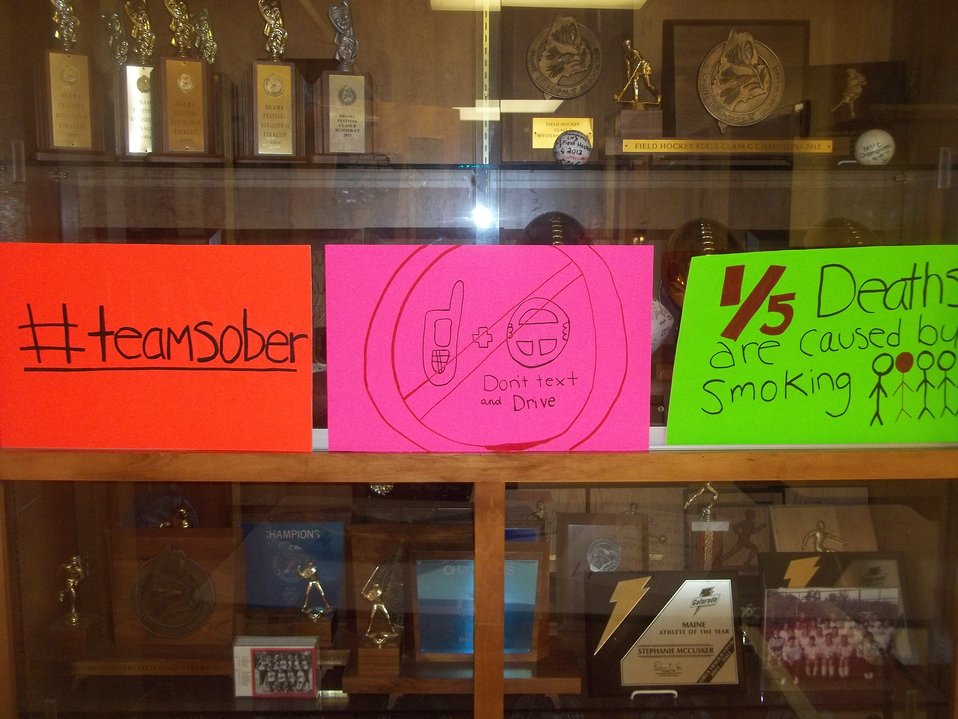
Lisbon, Maine's NDFW 2013

Lisbon, Me. Students from Lisbon High School SADD group held NDFW Event during halftime show, displaying posters, 'Shatter the Myths' books and stickers.